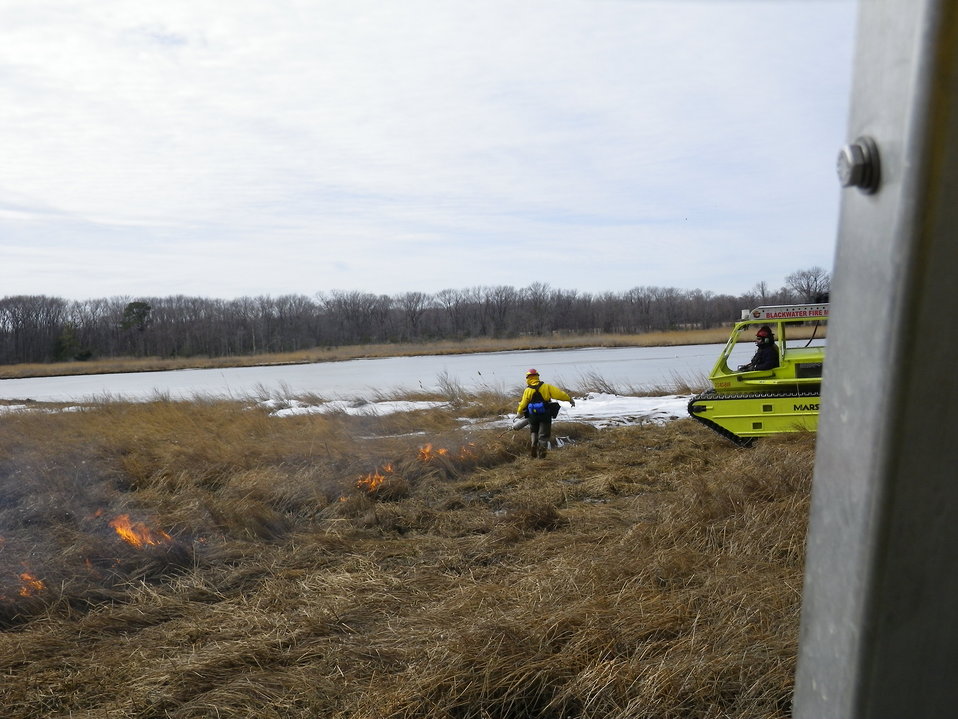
Burning for habitat in the Northeast

March, 2011, Eastern Neck National Widlife Refuge, Maryland. A firefighter lights a controlled burn in a brackish marsh while a Marshmaster operator stands by to hold the line. Using prescribed fire is an important tool in promoting habitat for migratory birds in the Chesapeake Bay area.